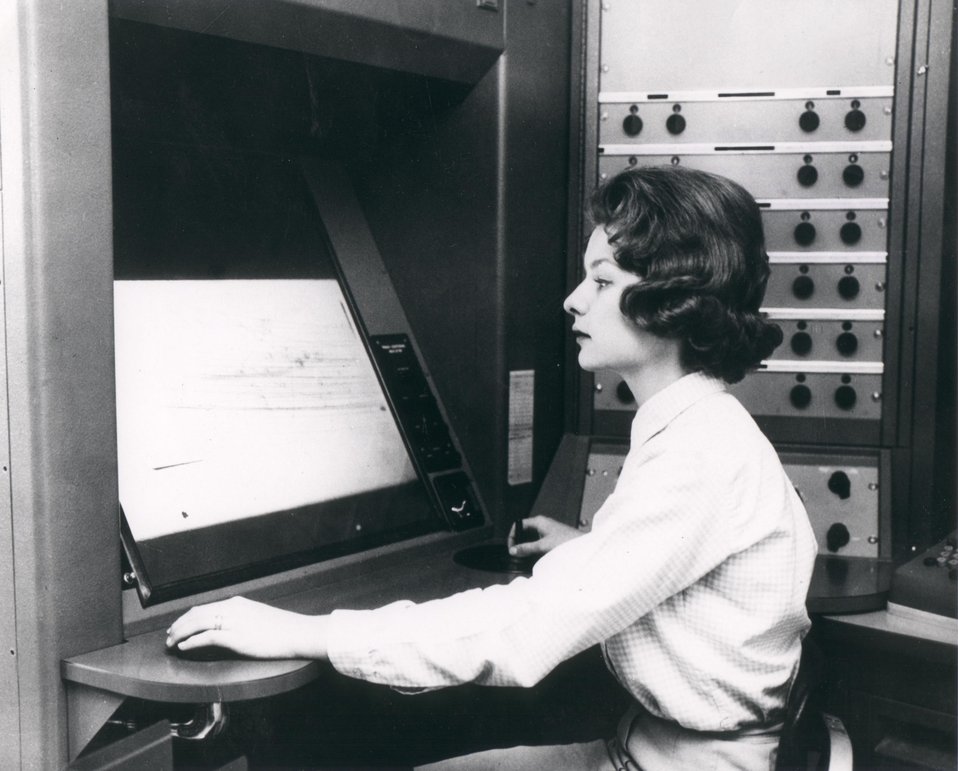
When photographic film is exposed to nuclear events that occur in a bubble chamber, these events are recorded in the form of tracks. Circa 1965.